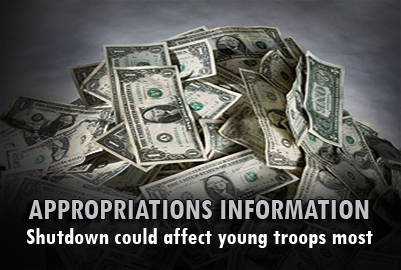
Appropriations Information